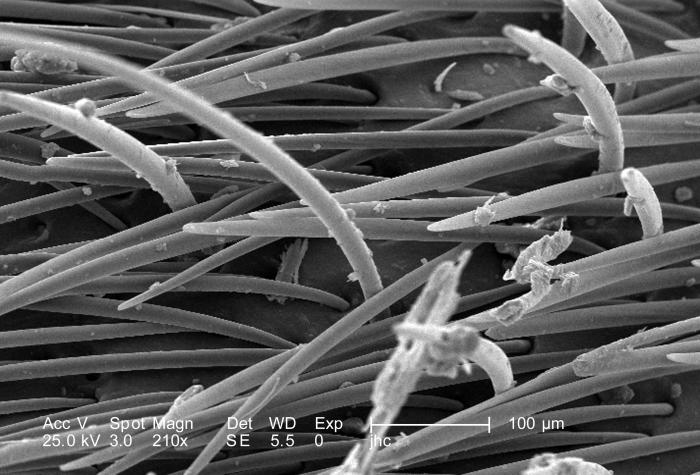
This scanning electron micrograph (SEM) revealed morphologic details on an unidentified region of a female velvet ant's, Dasymutilla sp., exoskeletal surface.At this magnification of 210X, you'll note the presence of sensorial 'hairs' upon the surface of the exoskeleton, which are really not hairs as in the mammalian sense, i.e., composed of keratin, but chitinous extensions composed of the same protein as that of the exoskeleton itself.The velvet ant is not really an ant at all, but a wasp, which merely resembles an ant, hence its name. It is a member of the Family, Mutillidae, and the Order, Hymenoptera. Also see PHIL 4638, 6363, and 6364 for photographs of the ant revealing its coloration, and velvety covering of external chitinous hairs.